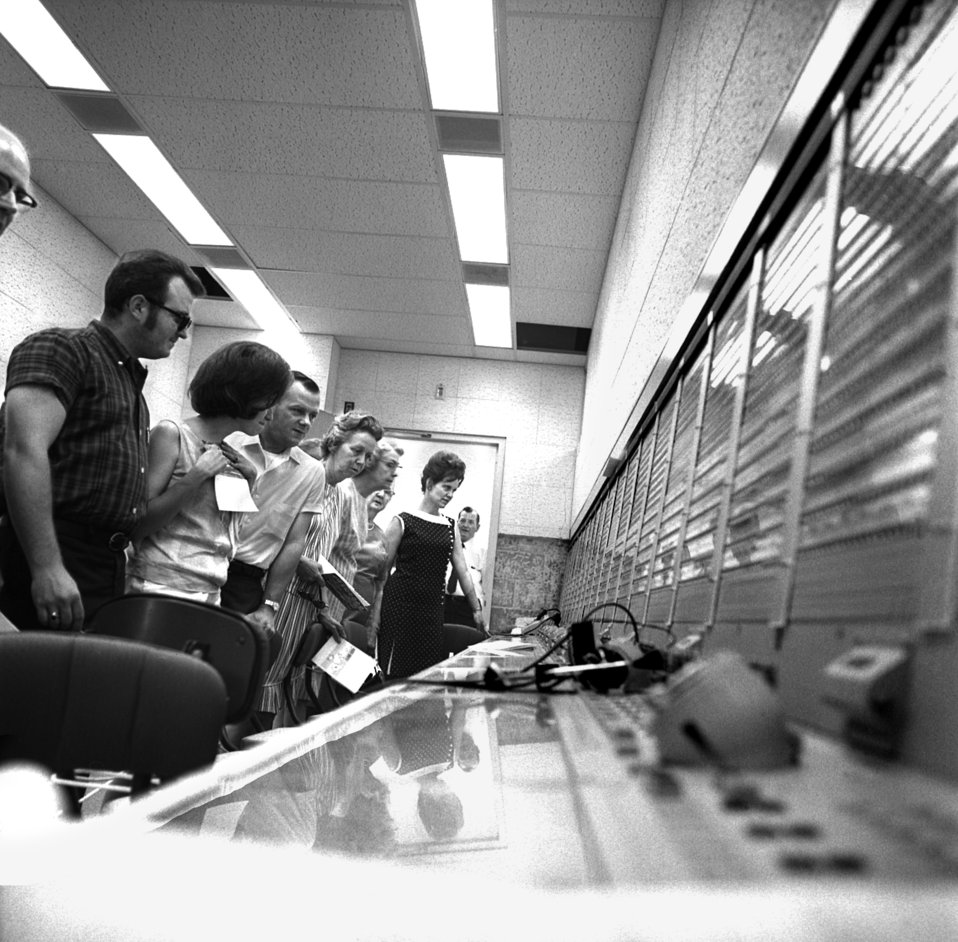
Formal Dedication New AEC (Atomic Energy Commision) - FOB (Federal Office Building) Oak Ridge

70-175a DOE Photo by Frank Hoffman
Formal Dedication New AEC (Atomic Energy Commision) - FOB (Federal Office Building) Oak Ridge Tennessee 6-27-1970